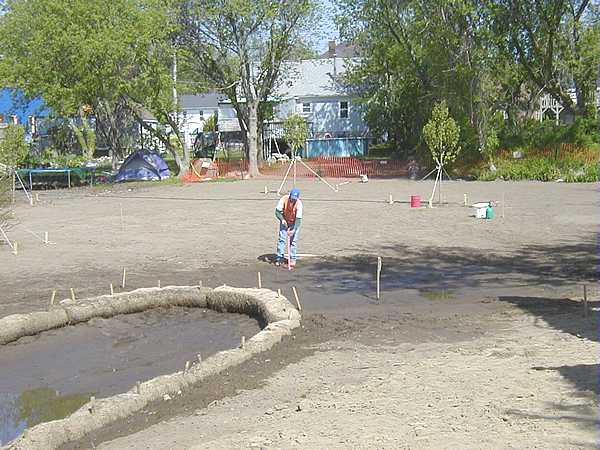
March 2001, Carefully replanting the cleanup area

After excavation and removal of contaminated soil and sediment between houses and the Acushnet River, cleanup crews carefully restored the grade of the landscape and native grasses of the area to natural conditions.